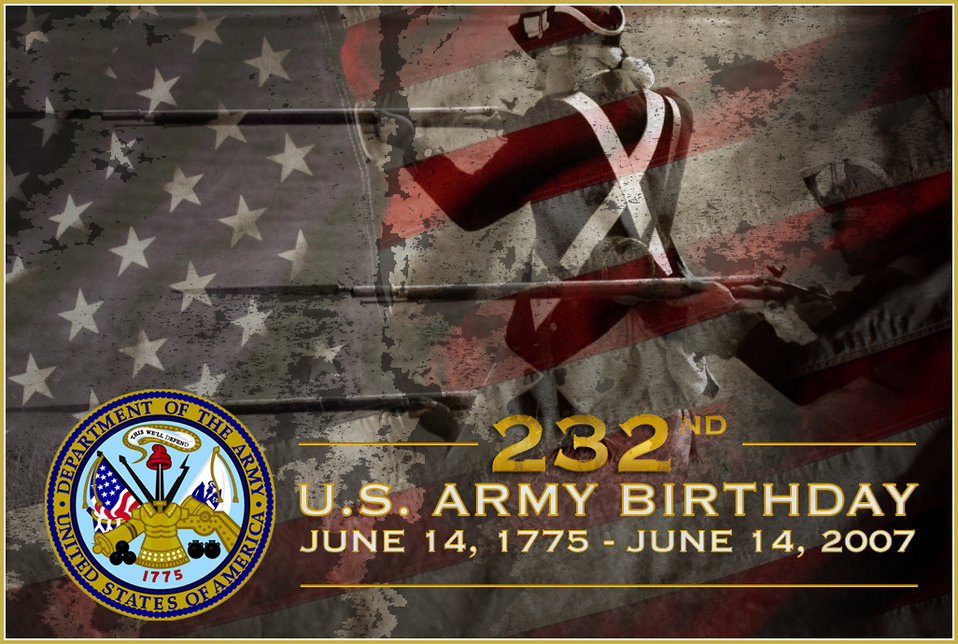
U.S. Army celebrates 232nd Birthday

Since its birth on June 14, 1775, more than a year before the Declaration of Independence was signed, the United States Army has played a vital role in the growth and development of our nation. Soldiers have fought more than 10 wars, from the American Revolution through the Cold War, the Gulf War, to the current war on terrorism. This 232nd Birthday is a recognition of the Army's history, traditions and service to the nation, a call to duty, 232 years of service to our nation.